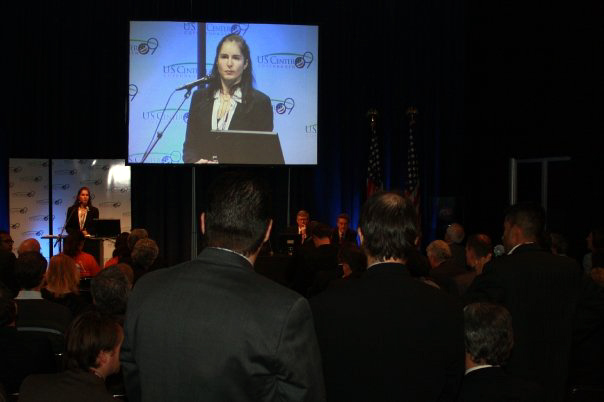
Mitigating Climate Change: Capturing Carbon Underground, in Soil, and in Plants

U.S. Department of Interior panel presentation, “Mitigating Climate Change: Capturing Carbon Underground, in Soil, and in Plants” at the U.S. Center at COP15, Bella Center, Copenhagen, Denmark on December 11, 2009.